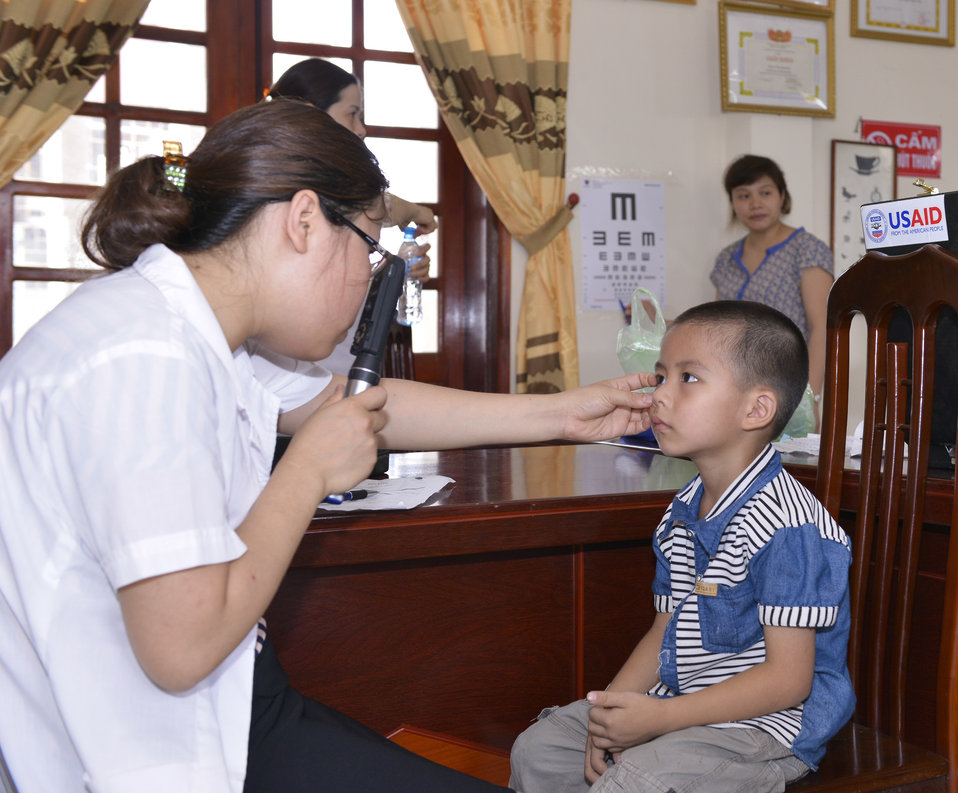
Eye screening for kindergarten children in Quoc Oai district of Hanoi

Quoc Oai, Hanoi. May 31, 2014.